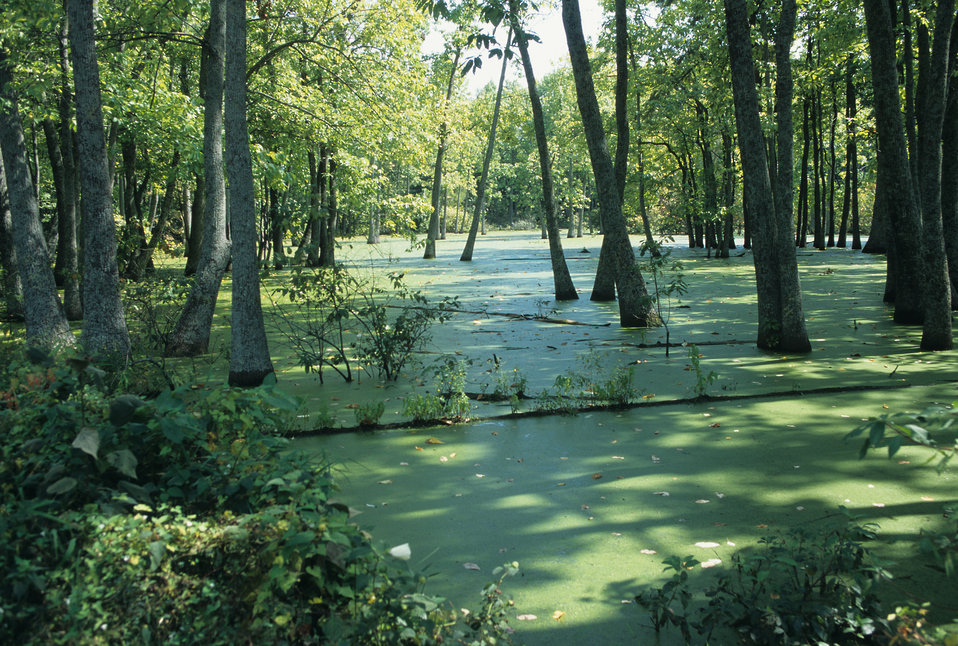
The sun shines through the trees at the Big Thicket National Preserve in late August 1996. The preserve is located just north of Houston and Beaumont, TX and has historically been home to dense woodlands in the state. The Big Thicket was mostly uninhabited until heavy settlement from the U.S. began in the mid-19th century, and was even used as a refuge by runaway slaves and other fugitives.